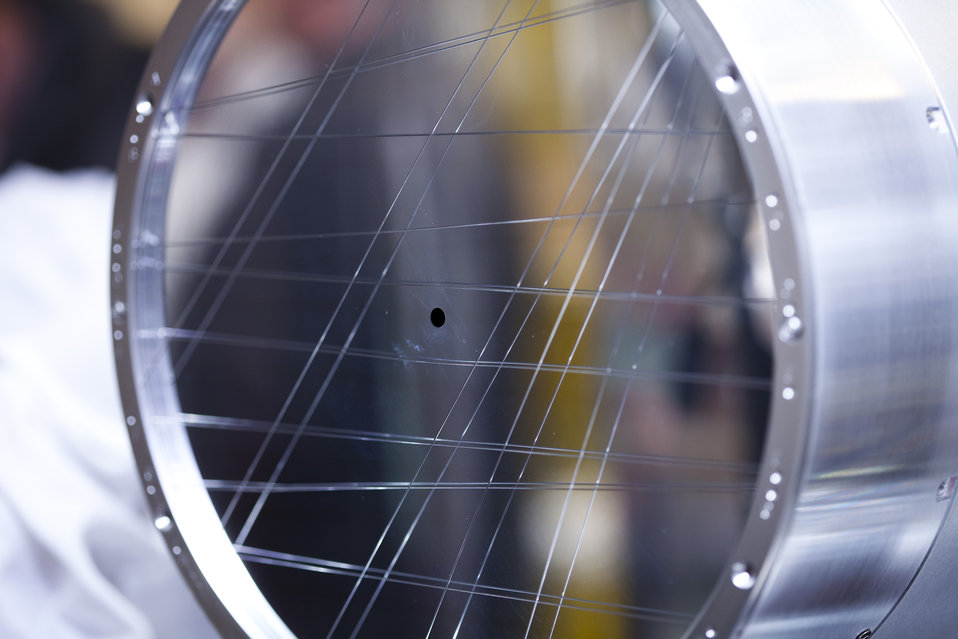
Close-up of the CXI detector face with shadow mask in place at SLAC.